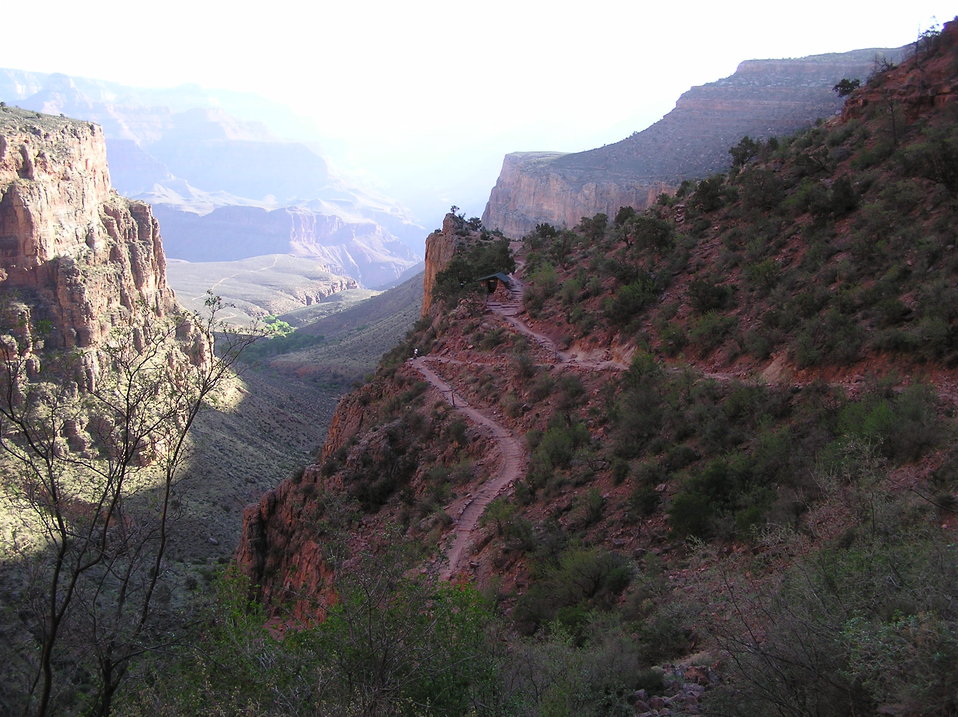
Indian Garden and Three-mile Resthouse from Bright Angel Trail, Grand Canyon National Park.